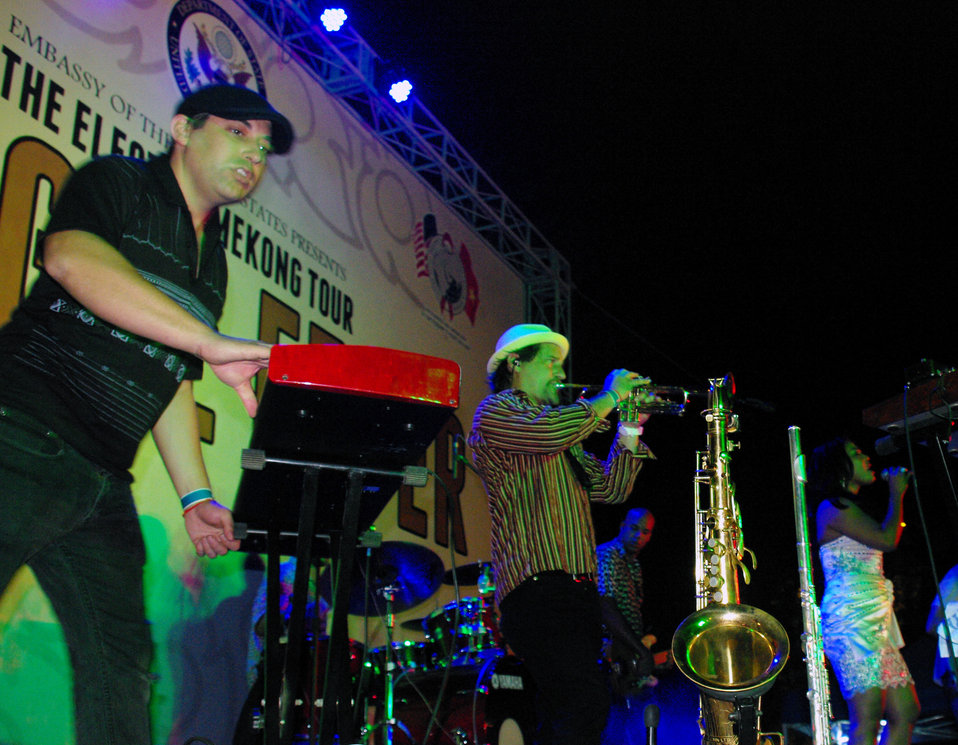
PEPFAR, U.S. Embassy Host Dengue Fever Concert in Hanoi